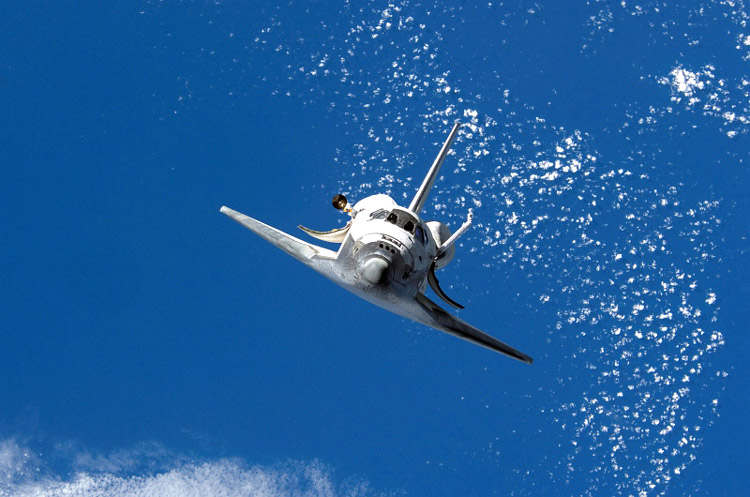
NASA recruiting volunteers

The current class of astronaut candidates will have the opportunity to fly into space as part of the continued human exploration of the solar system and beyond.